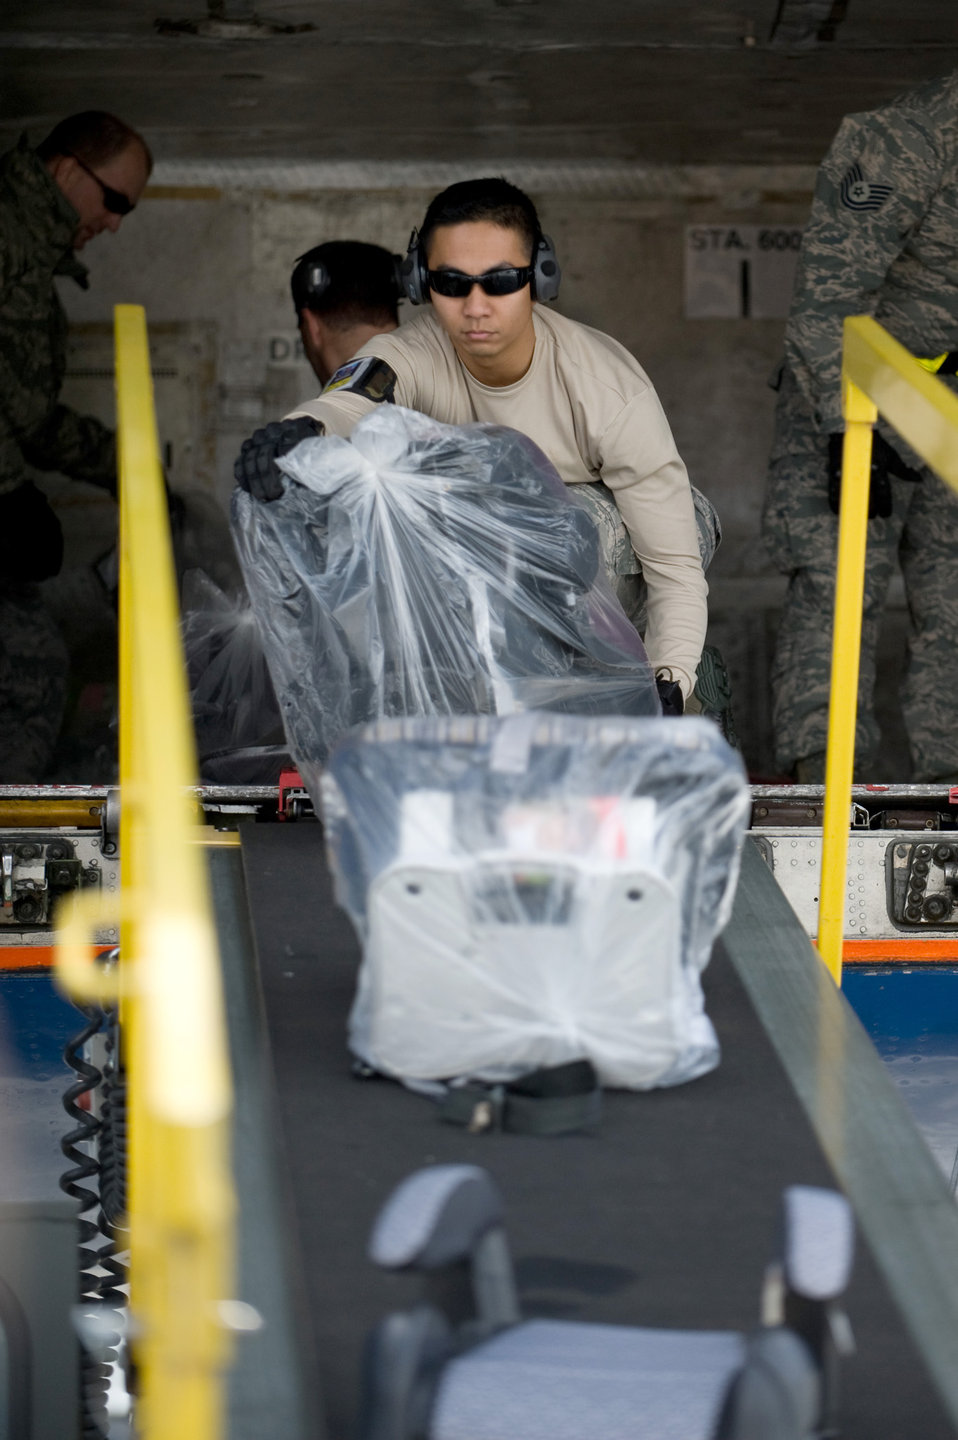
Operation Pacific Passage

Airmen unload baggage from a chartered aircraft that arrived from Japan, March 25, 2011, at Travis Air Force Base, Calif. Following the earthquake and tsunami that hit Japan on March 11, hundreds of family members from military bases in Japan voluntarily relocated to the U.S.